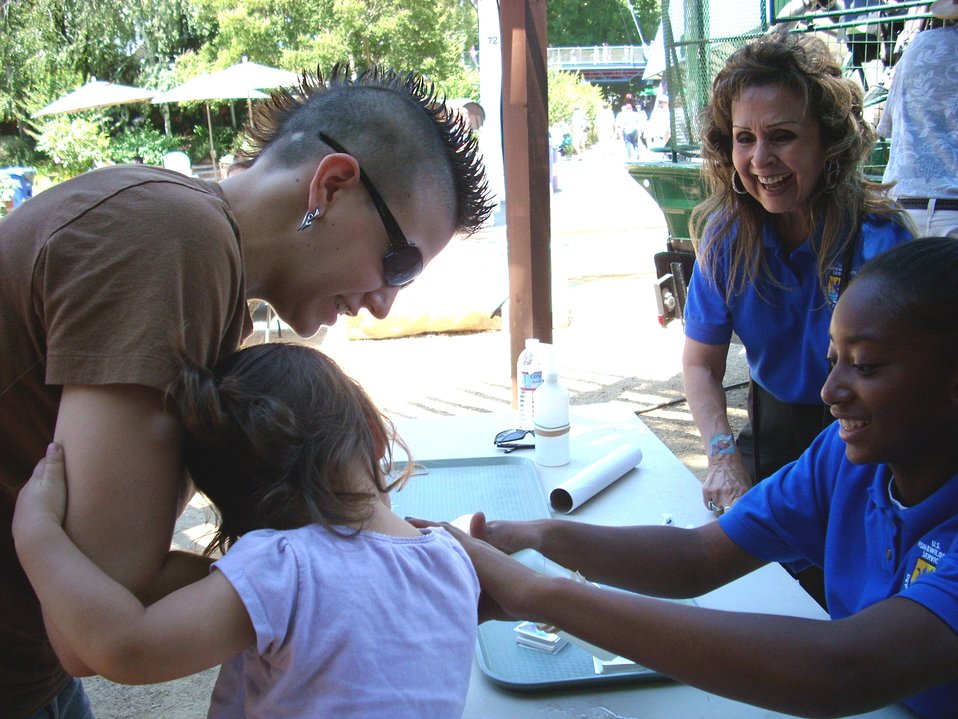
This little girl found all 12 of the hidden plush birds

For the first time DOI agencies [US Fish & Wildlife Service, Bureau of Reclamation and Bureau of Land Management] joined together to host an America's Great Outdoors Booth at the California State Fair in Sacramento, Calif., July 14 - 31.

The booth included informational panels and displays as well as a children's activity area. Activities: wildlife masks, temporary tattoos, water-cycle bracelets, fish prints, touch boxes, scat bingo, a green-screen, coloring and bird bingo. Five days a week live raptors, snakes and bats were brought in.

About 50,000 children visitied the booth during the 18-day fair.